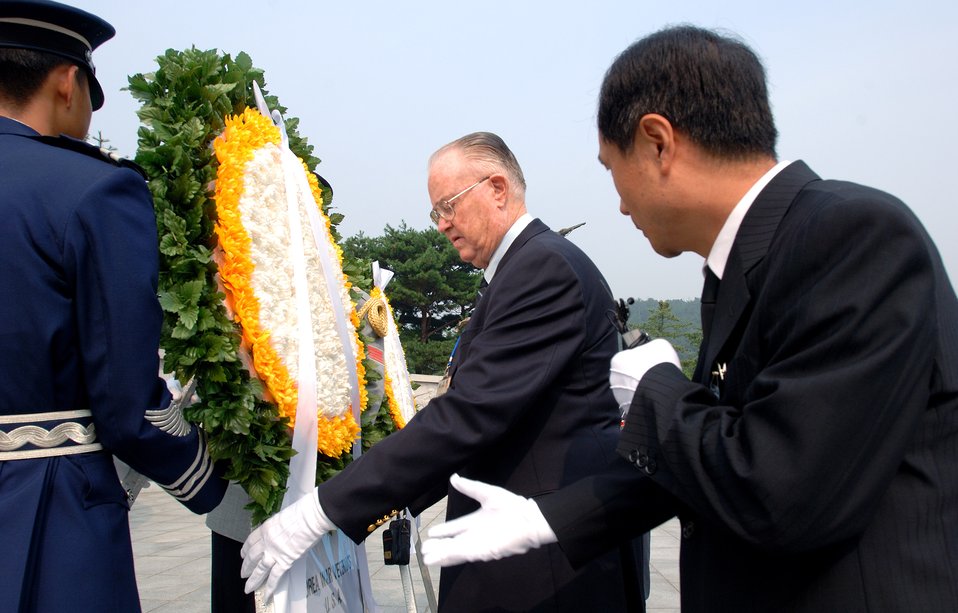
Korean War veterans give sage advice to Airmen

Retired Maj. Gen. Carl G. Schneider places a wreath before a Korean War Monument during a ceremony at the South Korean National Cemetery along with fellow Korean War veterans Sept. 12. The South Korean government's Revisit Korea program invites war veterans each year to come to South Korea to honor the men and woman from 21 countries who served during the Korean War. Nearly 25,000 veterans have participated in this program since 1975.